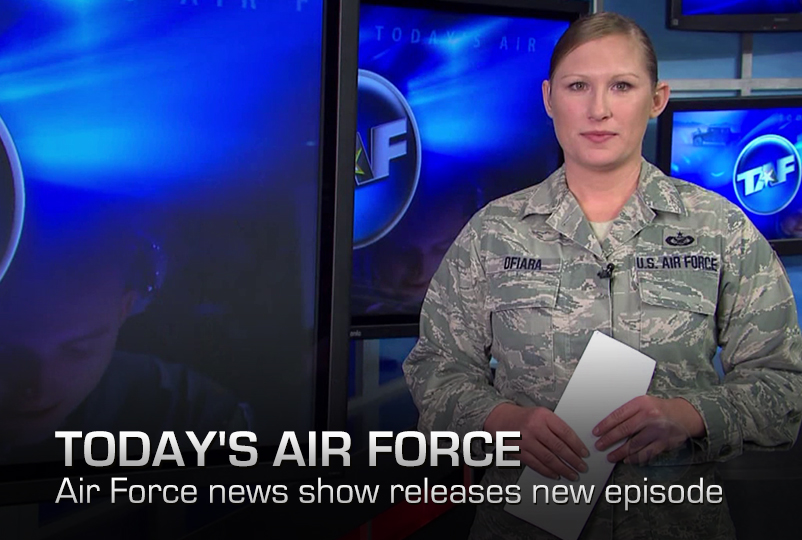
Today's Air Force